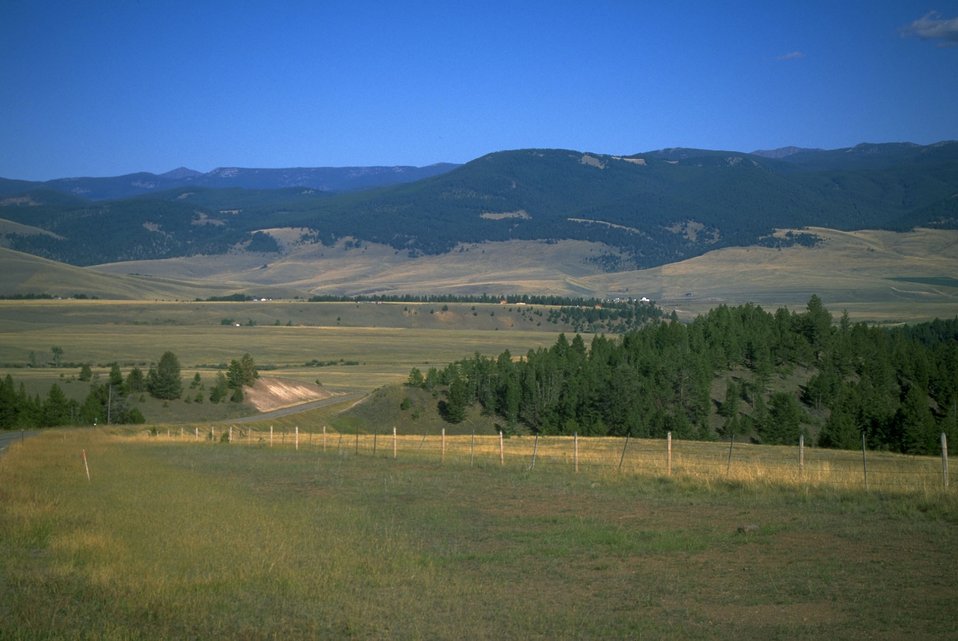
Rock Creek Valley